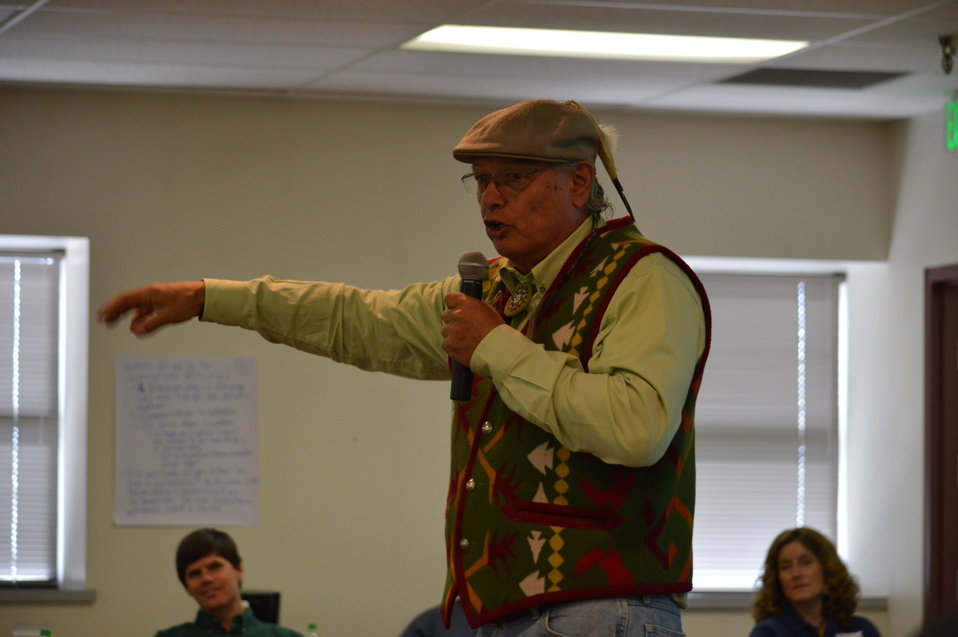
Eagle Summit III

Rick Williams presents over lunch at the Eagle Summit III in Denver, Colorado on March 20, 2014 at the Rocky Mountain Arsenal National Wildlife Refuge. .